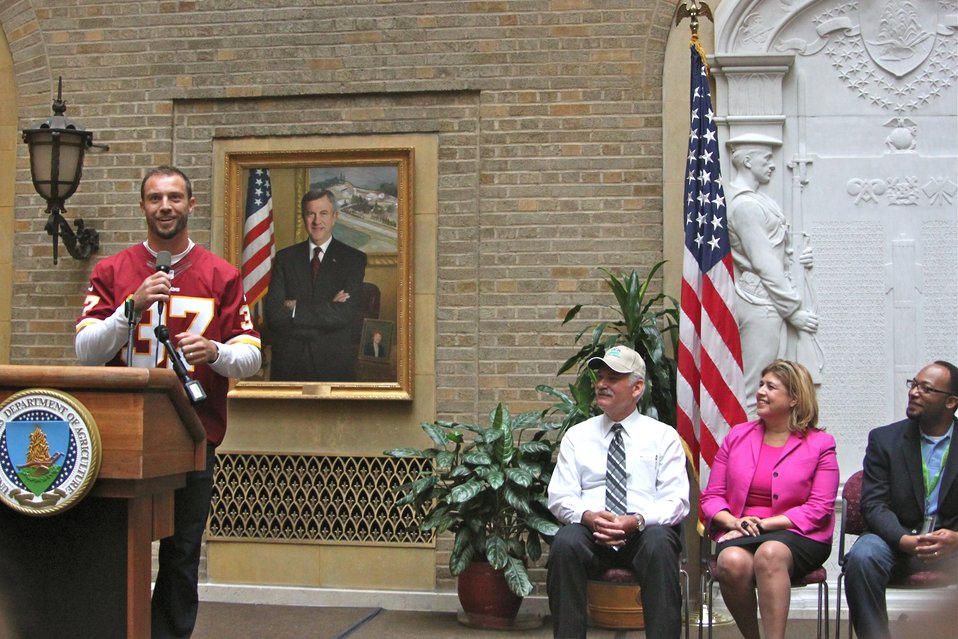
Reed Doughty and Fuel Up to Play 60

At the opening of the U.S. Department of Agriculture's (USDA) Farmers Market, Washington Redskins player Reed Doughty brought smiles to the crowd when he shared a story about his own kids' love of yogurt at the opening ceremony on Friday, Jun. 7, 2013. Doughty also highlighted the benefits of giving kids a variety of healthy foods, and how farmers markets are a great source of fresh ingredients to try.